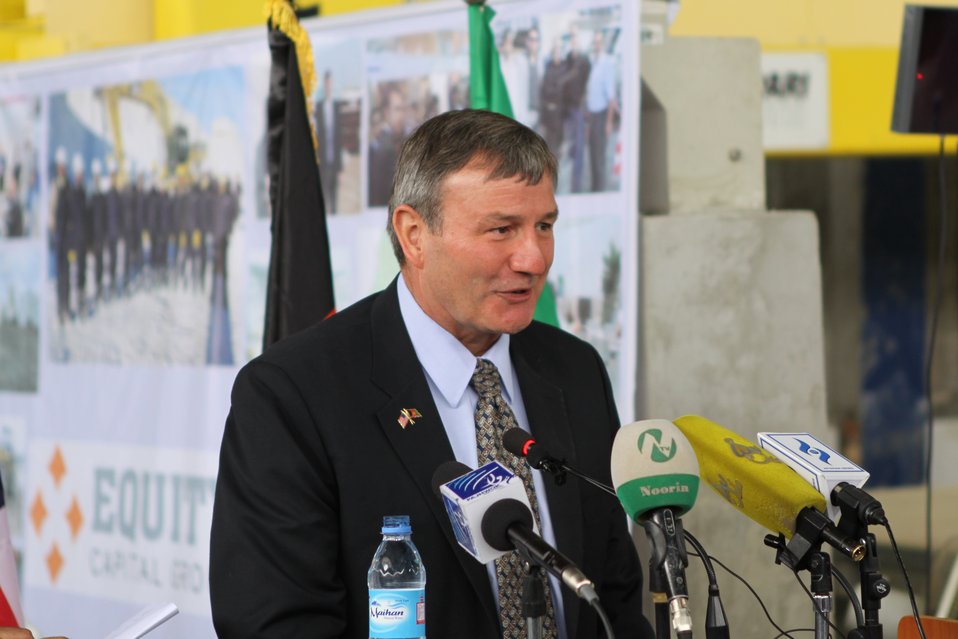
100525 Hirat Marble Conference 217